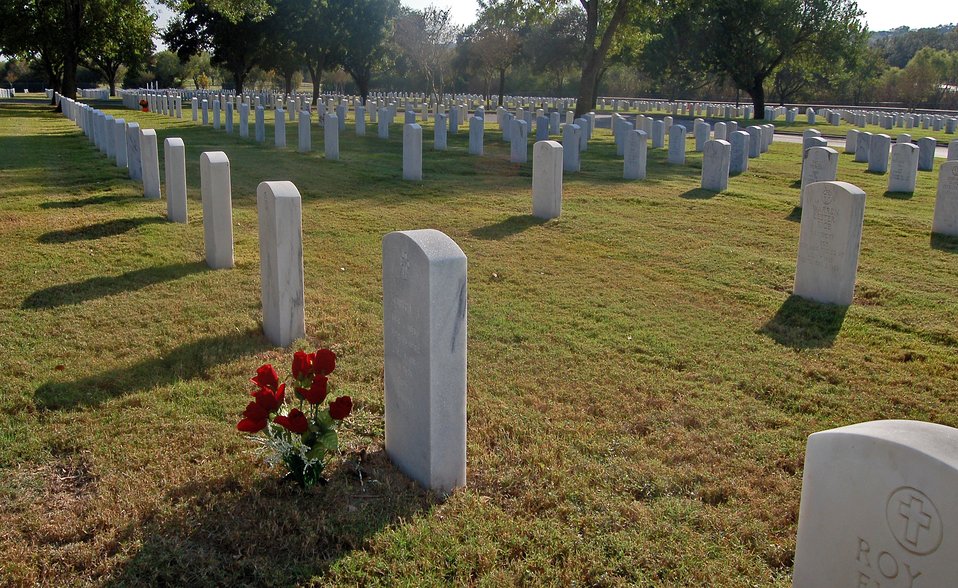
Airmen show respect to fallen servicemembers through community service

Roses adorn a gravesite at the Fort Sam Houston National Cemetery in San Antonio in honor of Veterans Day.